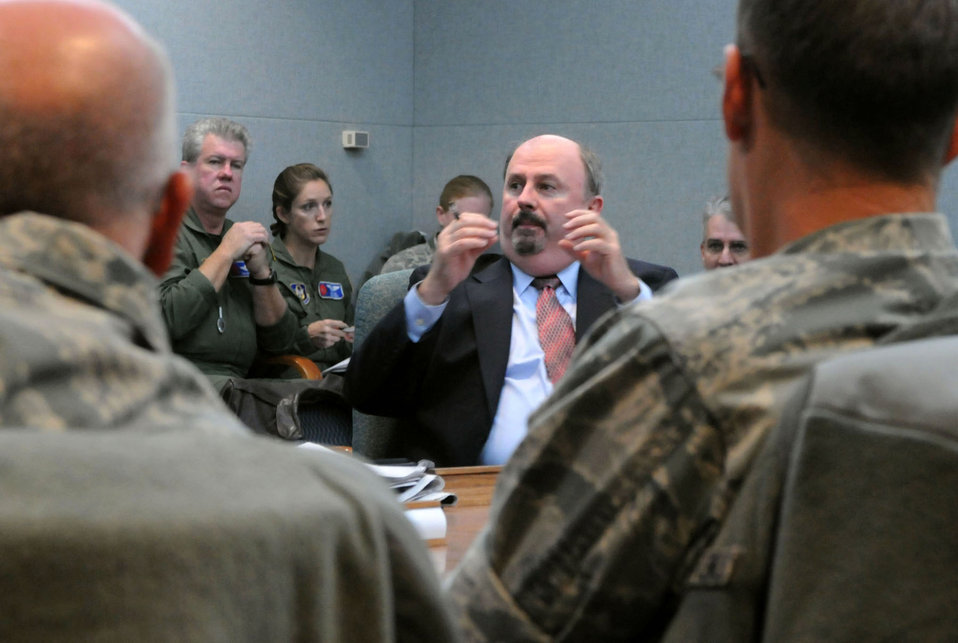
Special Reserve Missions

Thomas LaCrosse, director of Defense Support of Civil Authorities in the Office of the Assistant Secretary of Defense for Homeland Defense in America's Security Affairs, discusses issues concerning special missions in the Air Force Reserve Command. Airmen and aircraft from the 302nd Airlift Wing here, 403rd Wing, Keesler Air Force Base, Miss., and the 910th Airlift Wing, Youngstown Air Reserve Base, Ohio, convened Jan. 12-13, 2011, at Peterson AFB, Colo., for the first AFRC C-130 Special Missions conference. The conference was designed to share lessons learned, review policies and procedures, and tackle common support and wing issues involved with the aerial firefighting, weather reconnaissance and aerial spray missions.